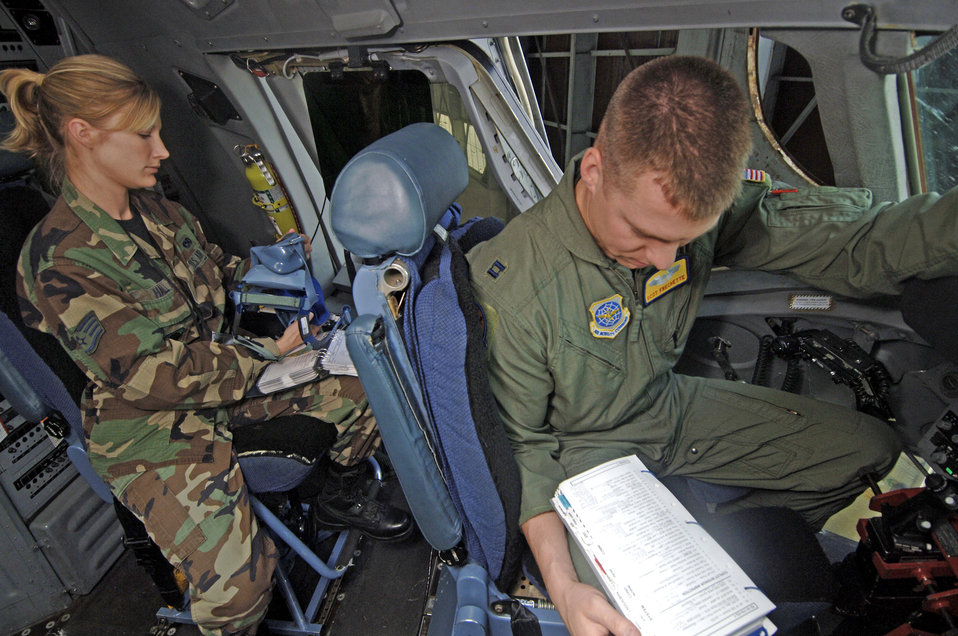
New C-17 checklist reduces redundancies

Capt. Scot Frechette does a safety check while Staff Sgt. Sarah Hall checks the pilot's mask for defects during a preflight inspection of a C-17 Globemaster III at Charleston Air Force Base, S.C. Captain Frechette is a pilot in the 16th Airlift Squadron and Sergeant Hall is a 437th Maintenance Squadron crew chief.